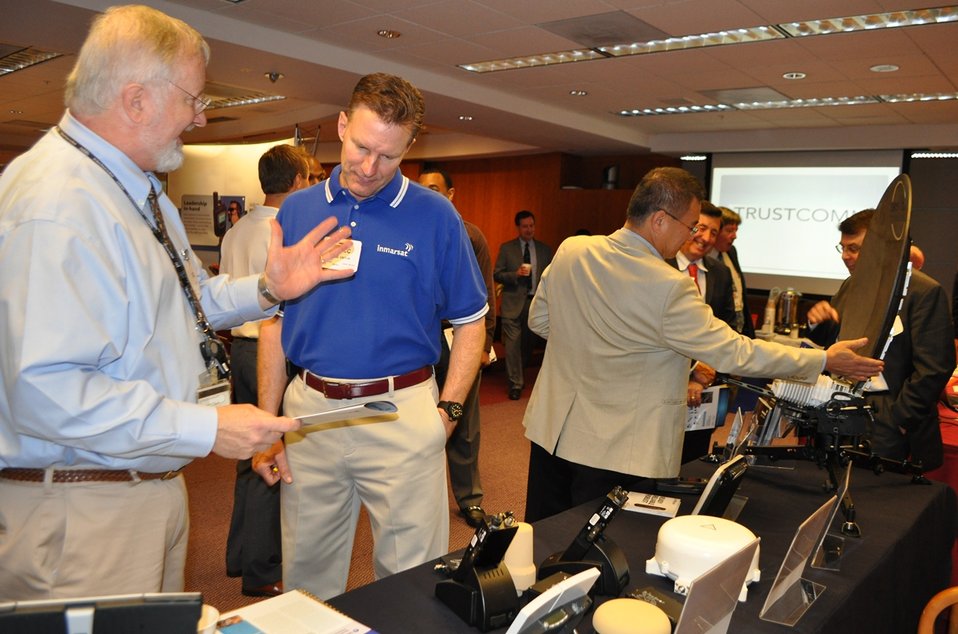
5.14.2014 Satellite Technology Demonstration

Satellite Technology Demonstration at FCC